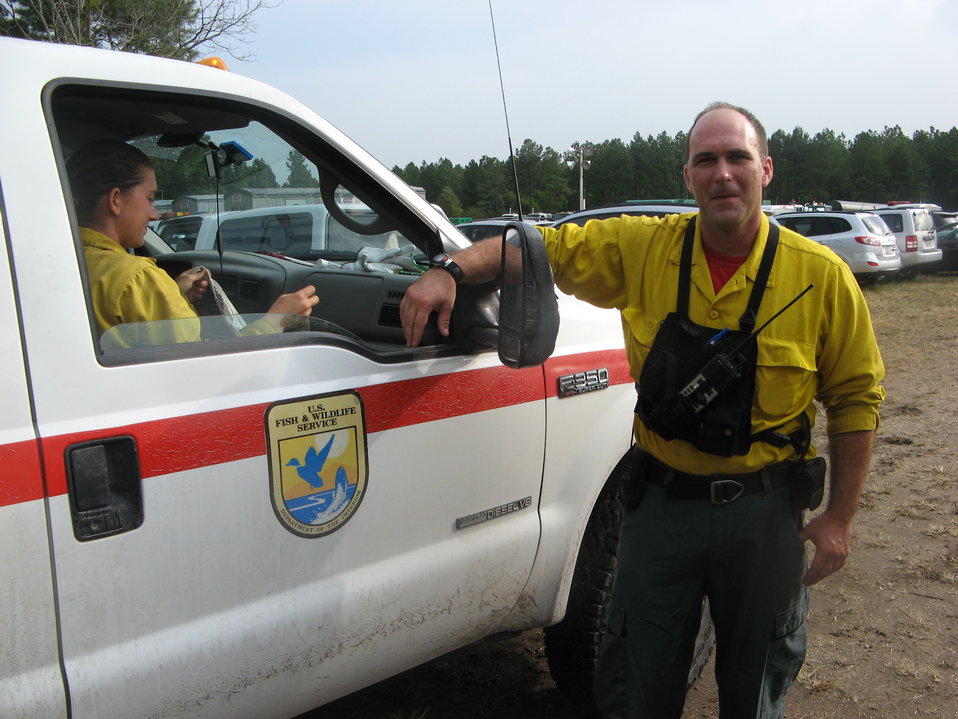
Mentoring firefighters

Suffolk, VA, August 2011:Veteran firefighter Brett Gore of Wallkill River National Wildlife Refuge enjoys mentoring firefighters like Chelsea Hurst of the AmeriCorps National Civilian Community Corps.